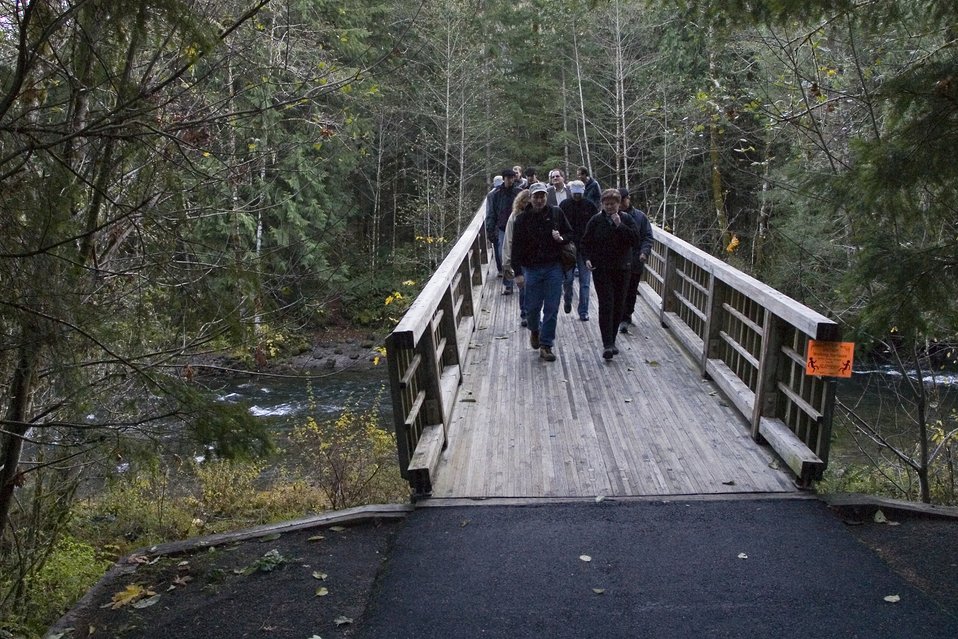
Wild Salmon Center Russian tour group crosses the Salmon River as part of their Cascadestream Watch visit.